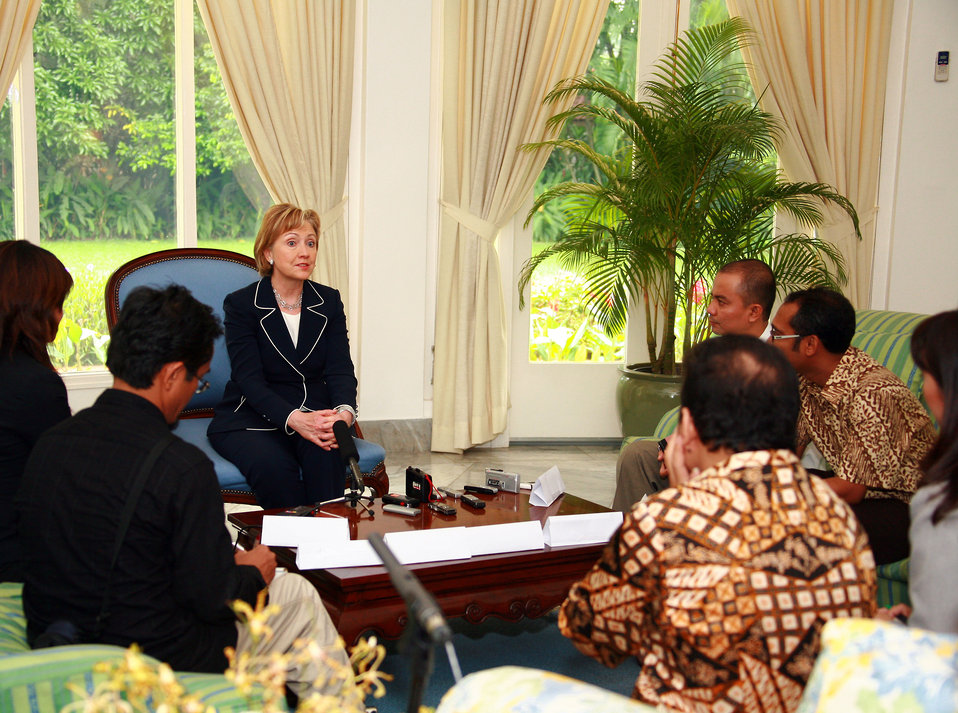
Secretary Clinton Leads Jakarta Media Roundtable

Secretary Clinton leads a media Roundtable at the U.S. Ambassador’s Residence in Jakarta, Indonesia February 19, 2009.